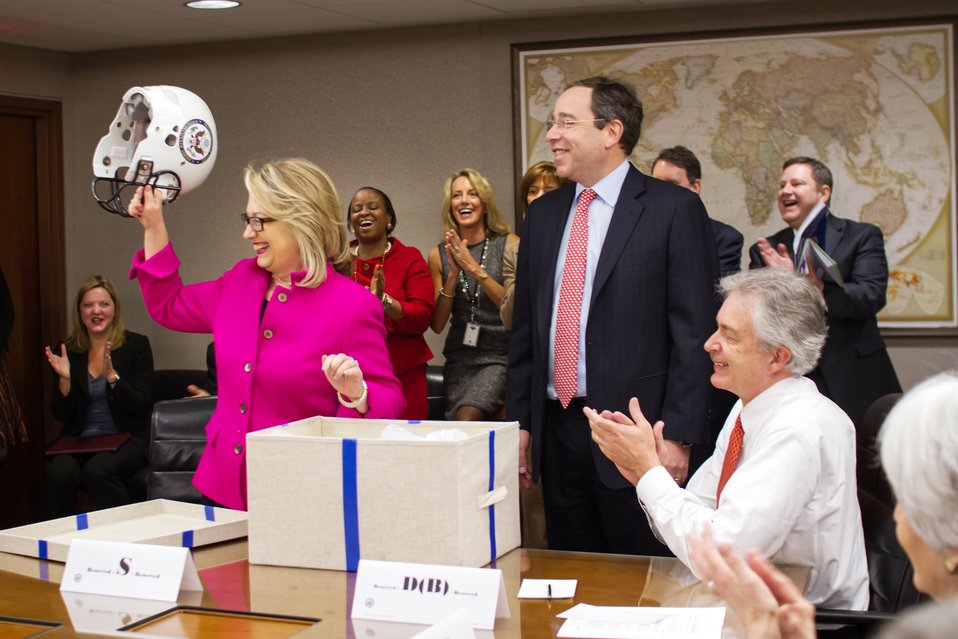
Secretary Clinton Is Presented With a Football Helmet

U.S. Secretary of State Hillary Rodham Clinton is presented with a football helmet by the State Department’s senior leadership on her return to the office in Washington, D.C., January 7, 2013. Deputy Secretary Nides told Secretary Clinton: As you know, Washington is a contact sport.